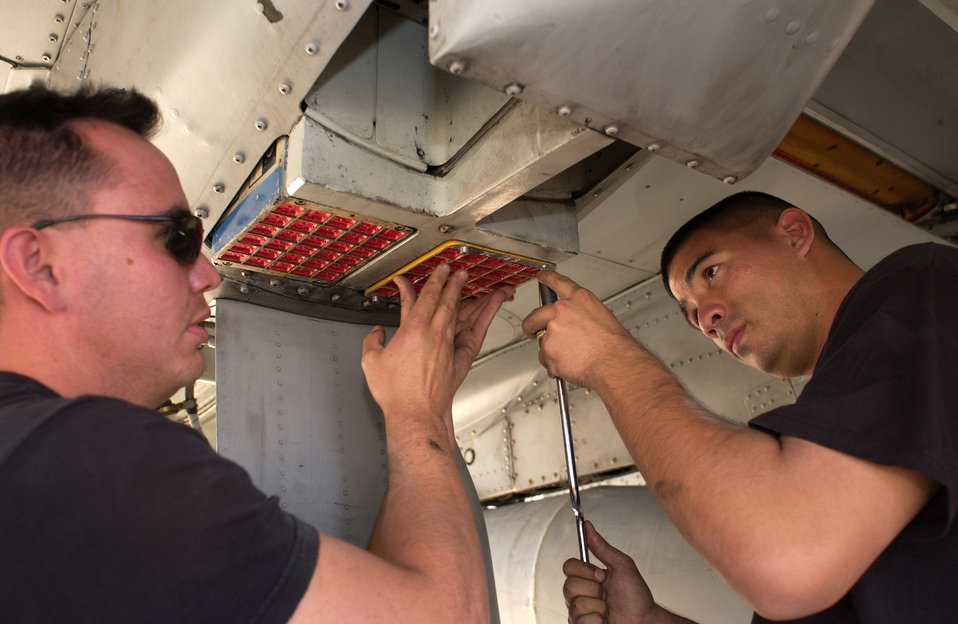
This A-10's getting ready to roll

Senior Airmen Randy Loera (left) and Jesse Vida install chaff and flare dispensers on an A-10 Thunderbolt II Oct. 28 on the flightline of Davis-Monthan Air Force Base, Ariz. The Airmen are weapons loaders from the 355th Maintenance Operations Squadron.